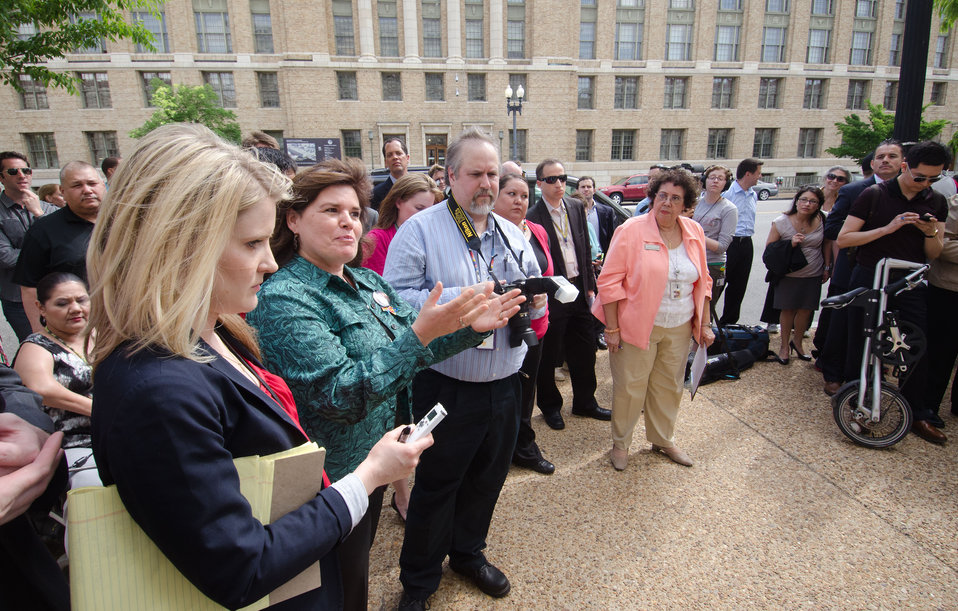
A member of the audience asks question of Agriculture Secretary Tom Vilsack after he kicked off the first planting of the Roots of American Agriculture garden, part of the Headquarters’ People’s Garden on Wednesday, April 27, 20ll in Washington, DC.